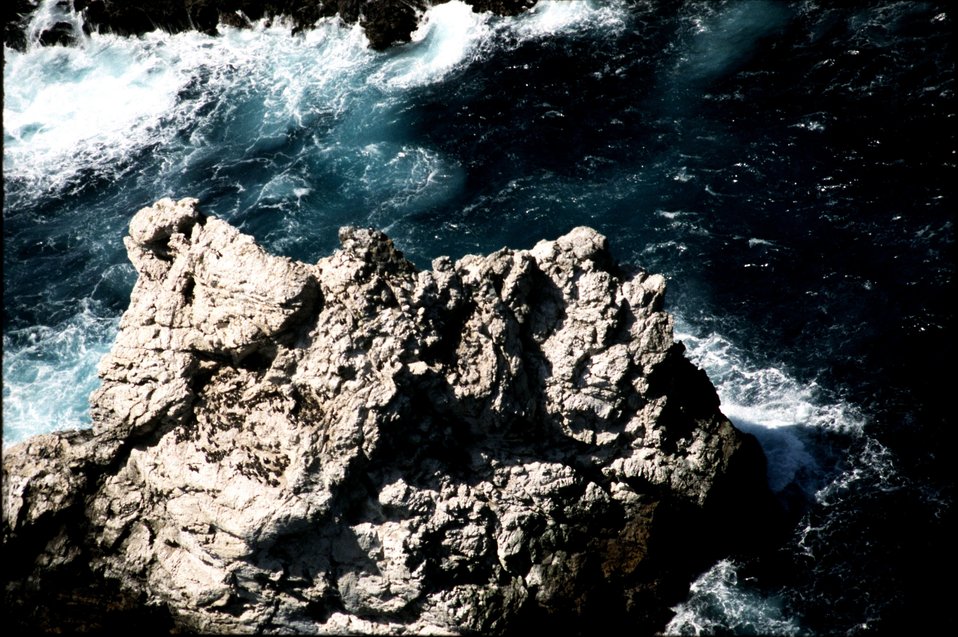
Castle Rocks